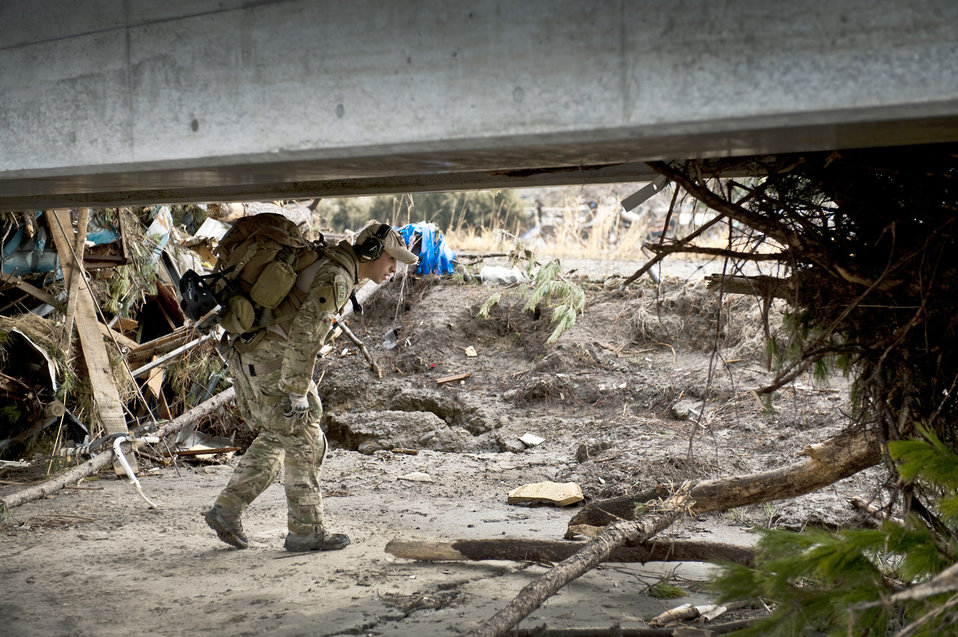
MC-130H Combat Talon II arrives at Sendai Airport

Senior Airman Steven Nizbet looks for trapped survivors March 16, 2011, at Sendai Airport, Japan. Airman Nizbet is a pararescueman assigned to the 320th Special Tactics Squadron.